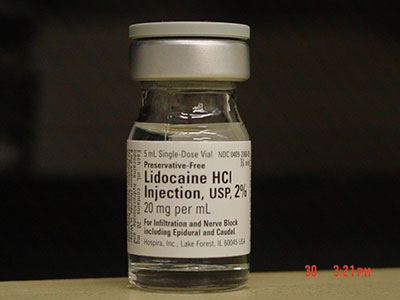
Recalled - Lidocaine HCl

December 23, 2013 – Product Recall – Hospira Issues a Voluntary Nationwide Recall of One Lot of Lidocaine HCl Injection, USP, 2%, 5 Ml in 5 Ml Vial, Due to Presence of Particulate Matter.